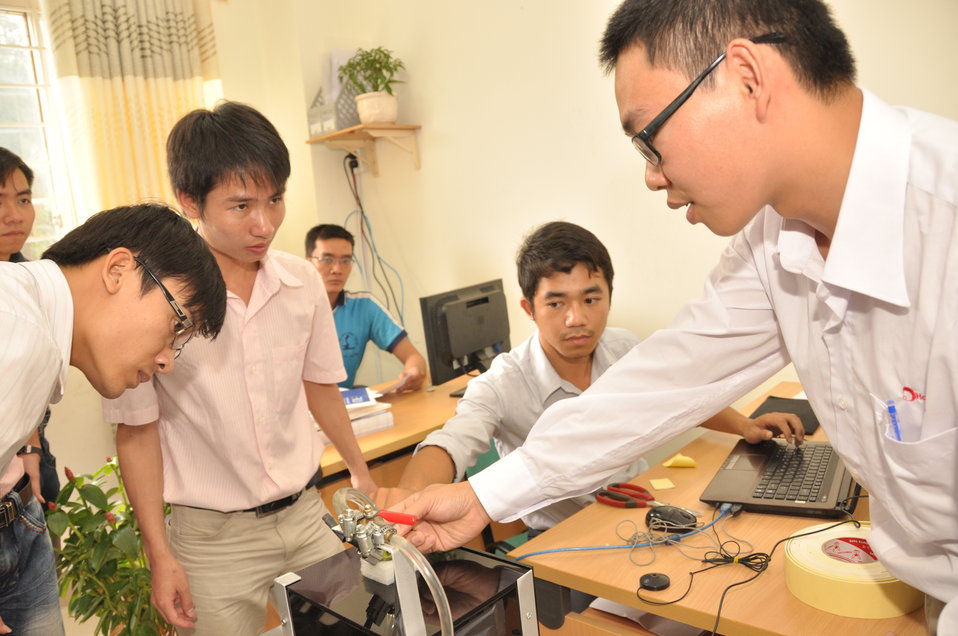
Ho Chi Minh City University of Technical Education, HEEAP Partner

Faculty Member Nguyen Ba Hai
January 11, 2013